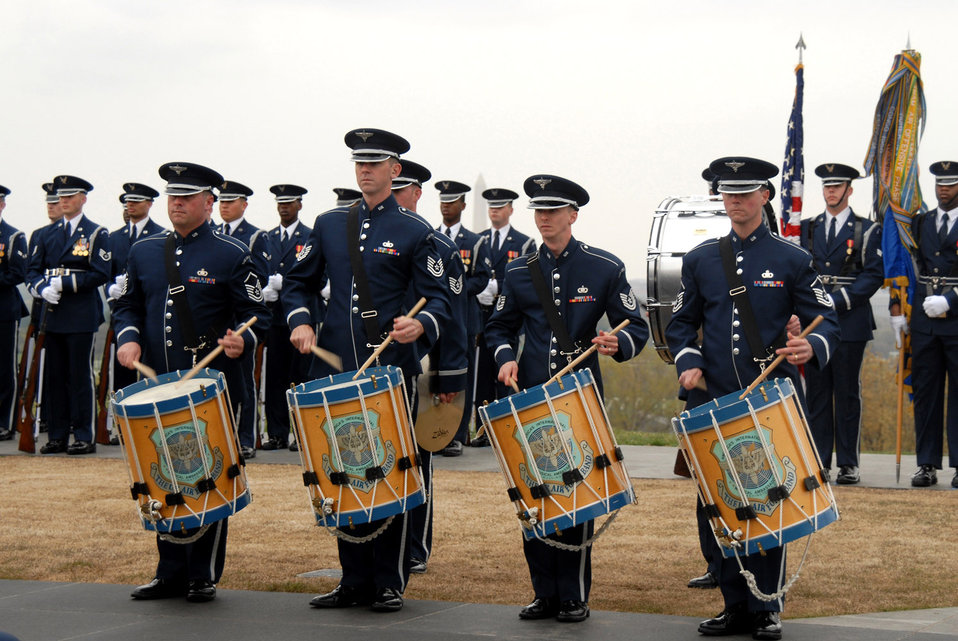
Air Force Review held at memorial

The Air Force Honor Band performed numerous musical numbers for the Air Force Review ceremony April 14 at the Air Force Memorial in Arlington, Va. Maj. Gen. Robert L. Smolen, the Air Force District of Washington commander, was the host and reviewing official for the event.